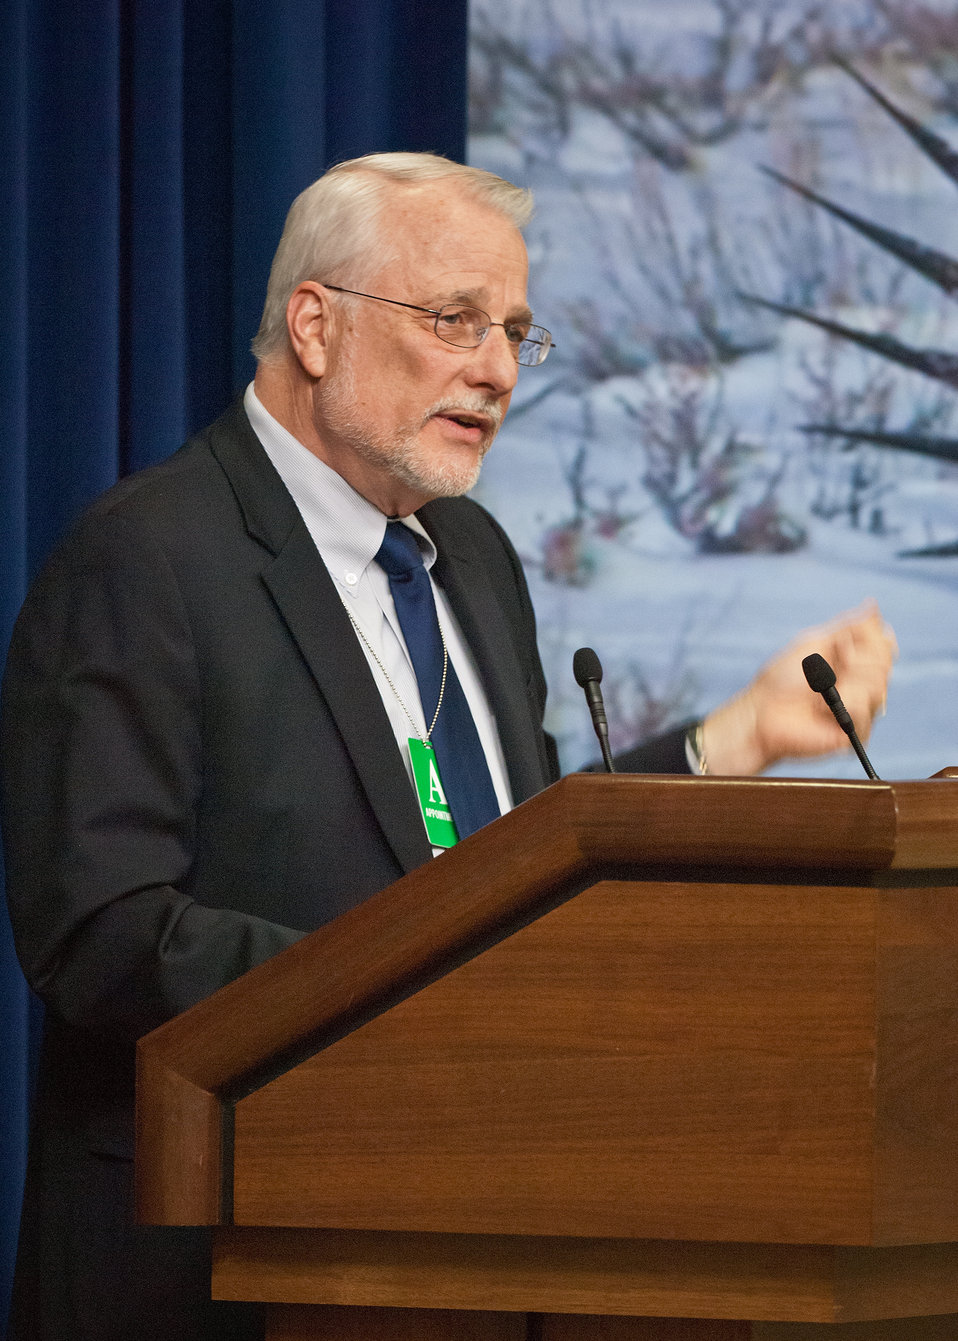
Dave White, Chief, Natural Resources Conservation Service discussed the success of conservation efforts of the United States Department of Agriculture Natural Resources Conservation Service at the 11th Annual Meeting of State Agriculture and Rural Leaders at the Eisenhower Executive Office Building in Washington, D.C., on Friday, January 6, 2012.